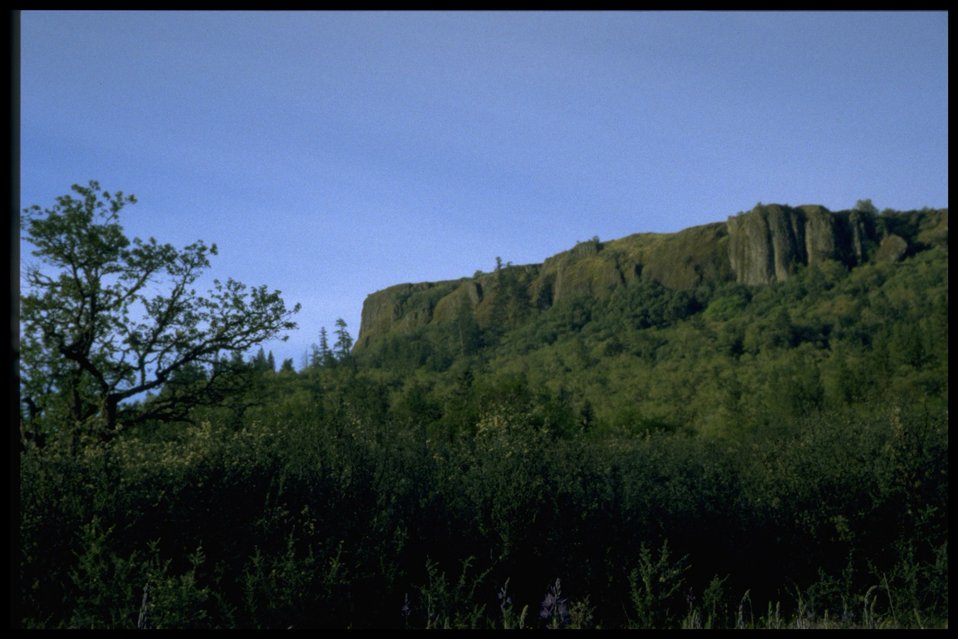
Scenic view of Lower Table Rock.